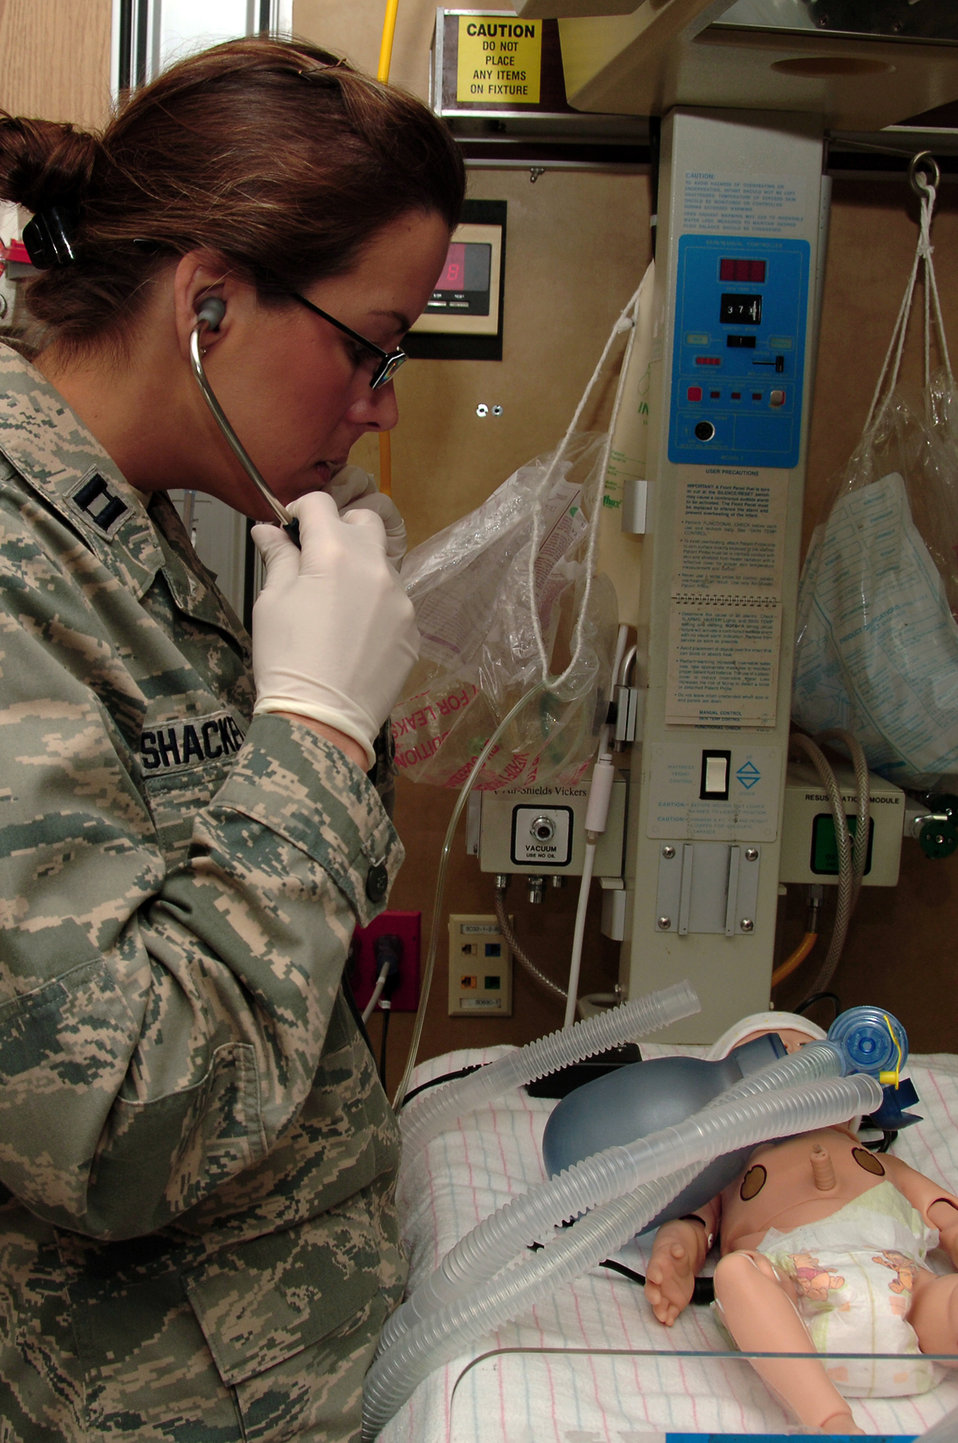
EM residents use simulation mannequins for grand rounds

Capt. (Dr.) Brenna Shackelford, emergency medicine resident, 59th Emergency Medicine Squadron, checks the vital signs of a newborn as part of a scenario during simulation grand rounds May 21 in the Wilford Hall Medical Center simulation center, Lackland Air Force Base, Texas. The simulation grand rounds is held every few months and used to augment and improve resident education.